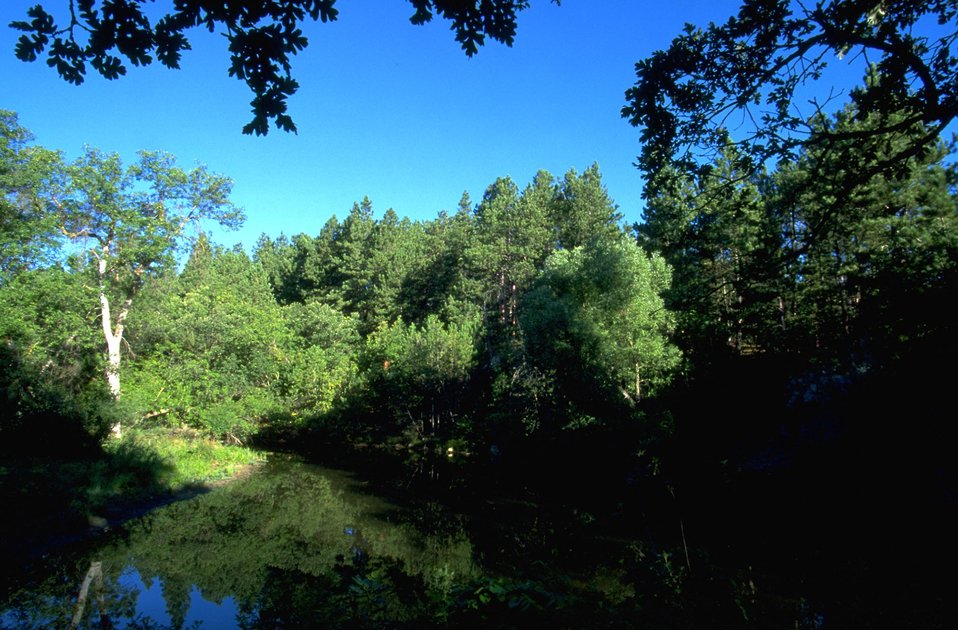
Frog Pond on Cattle Creek